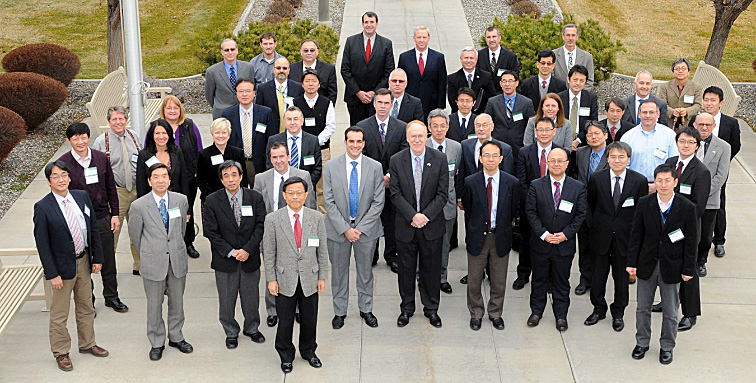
EM-Led Delegation Hosts Successful Second Workshop in U.S. for Japanese Officials

An EM-led delegation said its recent workshop for Japanese officials working to clean up from the Fukushima Daiichi Nuclear Power Plant accident was a success.

EM gave the Japanese visitors tours of several facilities used in the Hanford site’s nuclear cleanup operations. EM experts shared their expertise and experience in contaminated soil and groundwater removal.